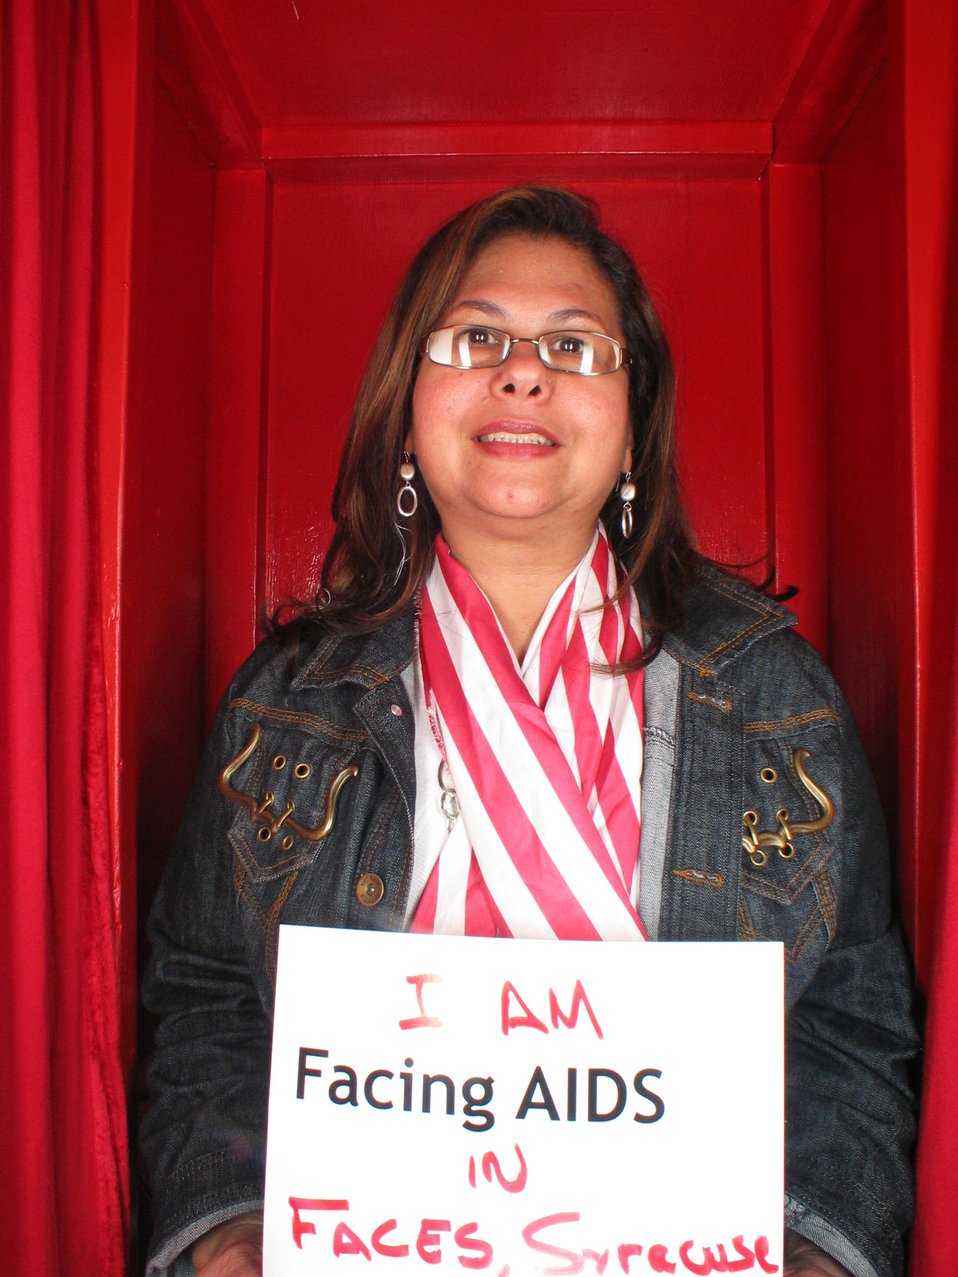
I am Facing AIDS in Faces Syracuse